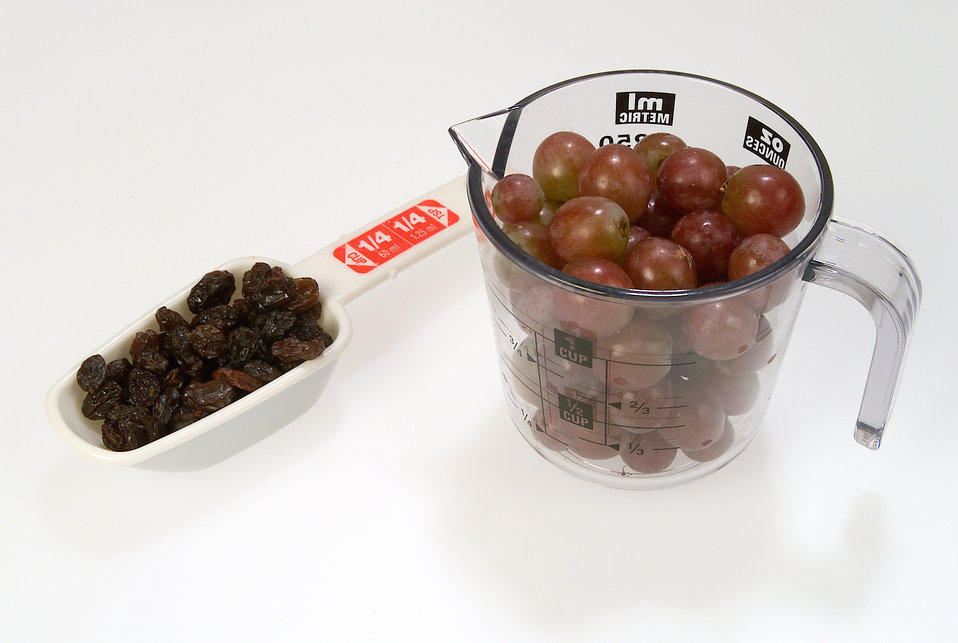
This image depicts a � cup scooper that was filled with a � cup of sundried raisins, which had been set next to a one-cup measuring cup containing approximately a cup of freshly-washed seedless red grapes.